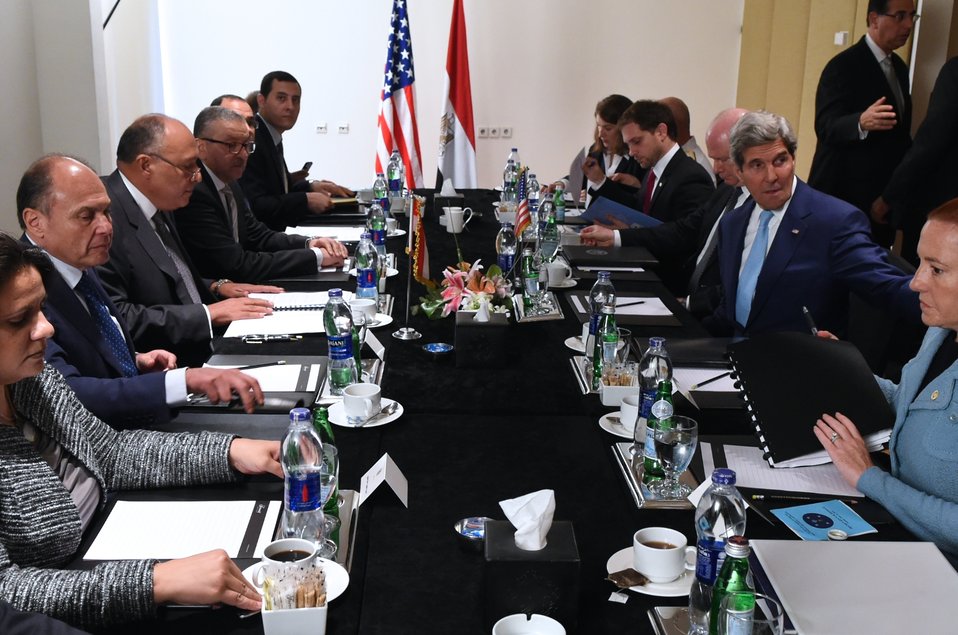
Secretary Kerry, Egyptian Foreign Minister Shoukry and Teams Hold Bilateral Meeting in Cairo

U.S. Secretary of State John Kerry, newly installed Egyptian Foreign Minister Sameh Shoukry, and their respective teams settle in at the outset of a bilateral meeting in Cairo, Egypt on June 22, 2014.